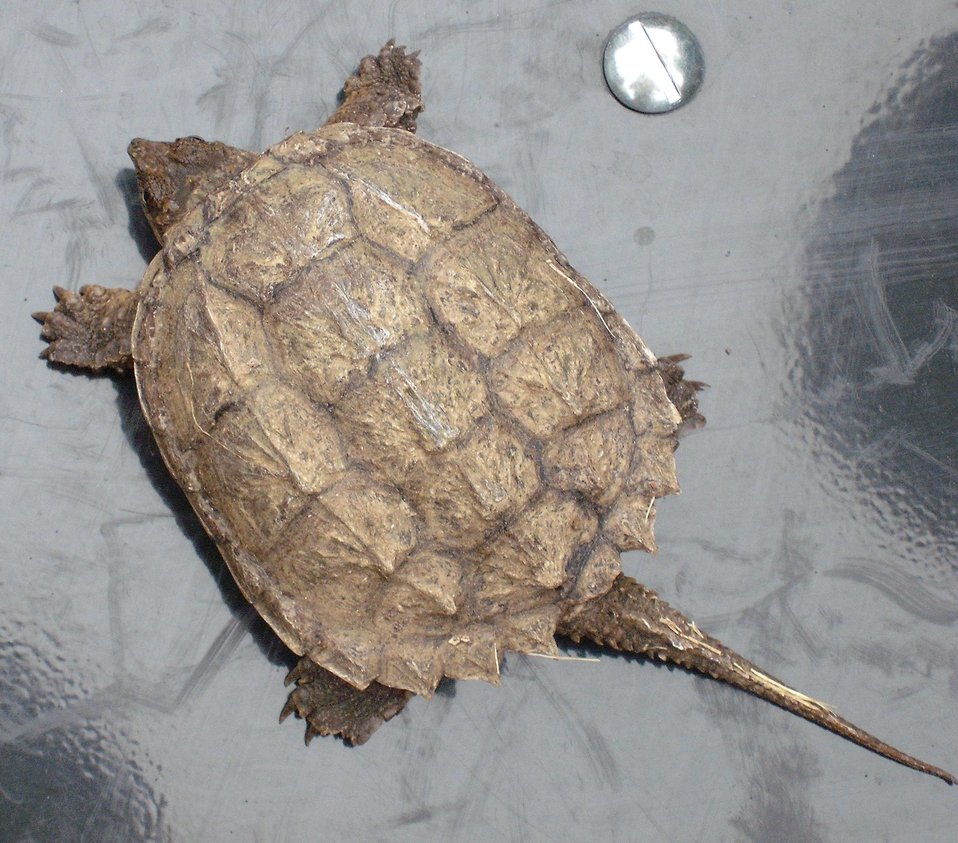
A baby snapping turtle, caught 10 August 2008 in Rogers County, Oklahoma. About 4 inches (10 cm) across the shell. Took some pictures, then released the turtle.